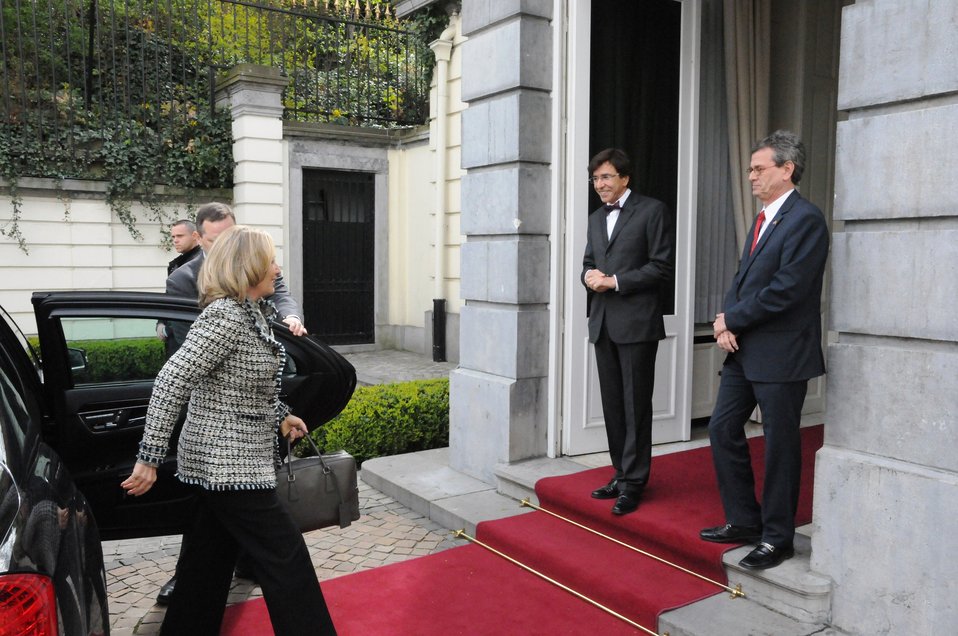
Secretary Clinton Arrives at the Prime Minister's Residence

U.S. Secretary of State Hillary Rodham Clinton is greeted by U.S. Ambassador to Brussels Howard Gutman, right, and Belgian Prime Minister Elio Di Rupo, center, upon her arrival at the Prime Minister's residence in Brussels, Belgium, on April 18, 2012.